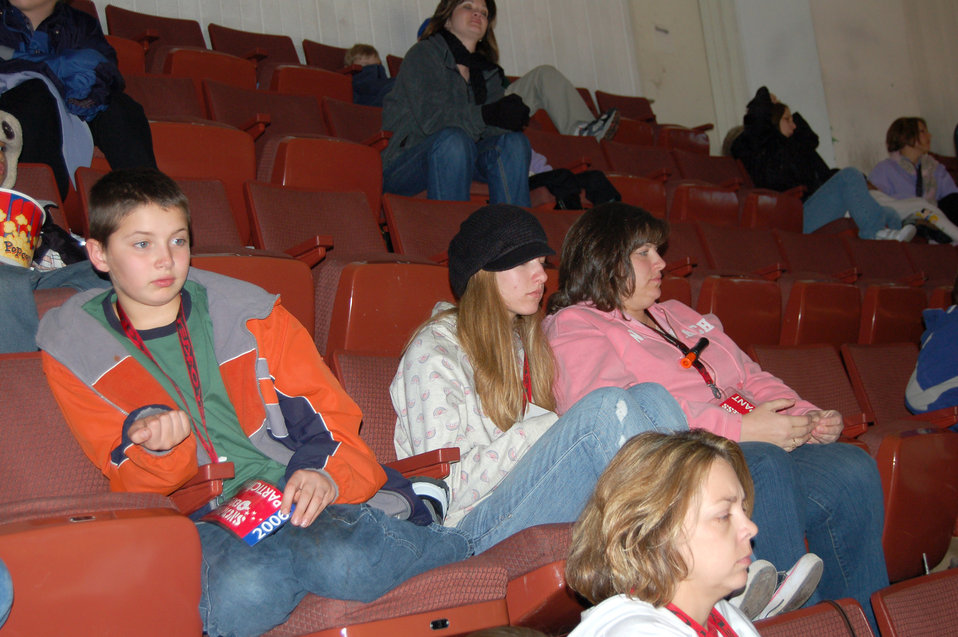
Magical weekend ends on ice

Gary, Alicia and Delisa Komppa watch a NHL match up between the Anaheim Ducks and Calgary Flames Dec. 18. The game was the final activity of the four-day Snowball Express event. The event was open to all military families who lost someone in the war on terrorism.